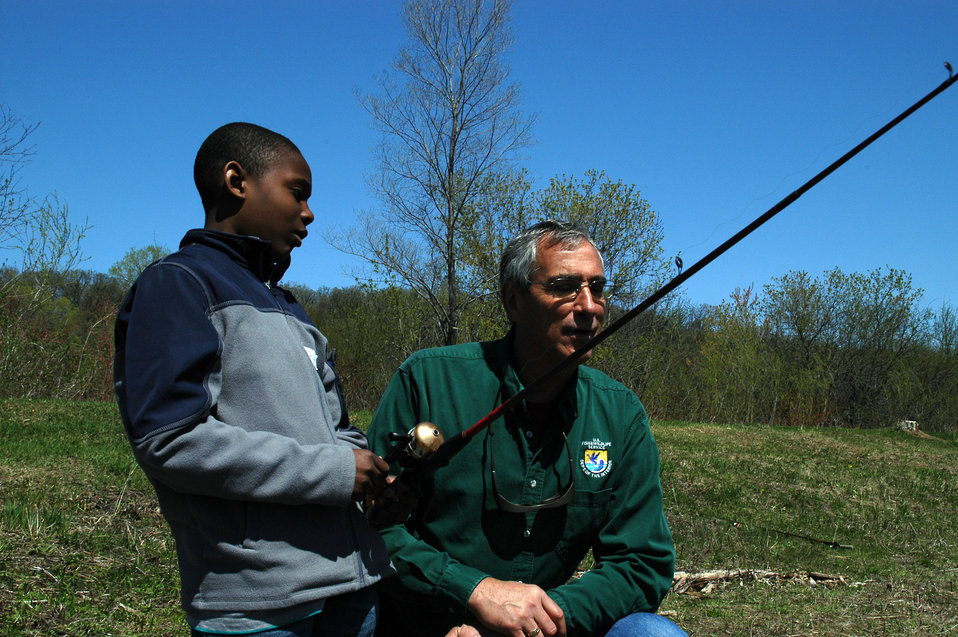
Regional Director Tom Melius Chats with Student About Fishing Experiences

After sharing his own experience, Regional Director Tom Melius listens to student talk about his previous experience with fishing.